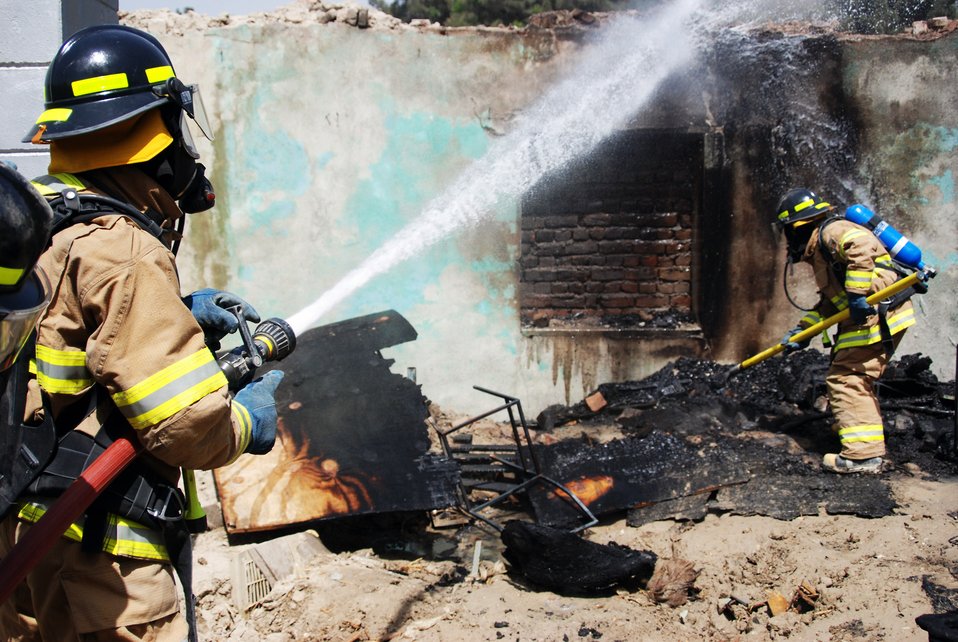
Afghan student firefighters put to the test

Members of the Afghan National Army Air Corps battle flames in an abandoned building during an exercise May 12 at Kabul, Afghanistan, during a firefighting course. The four-month course was mentored by Master Sgt. Michael Marascia of the Combined Air Power Transition Force. More than 1,500 firefighters will be trained in the next two years.